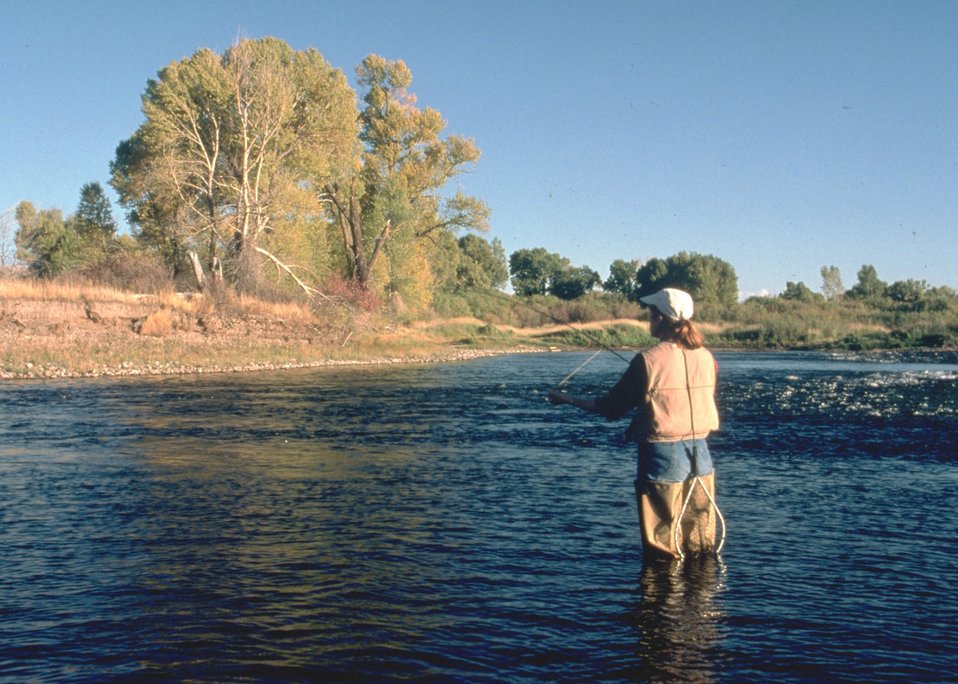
Fly fishing in Wyoming.